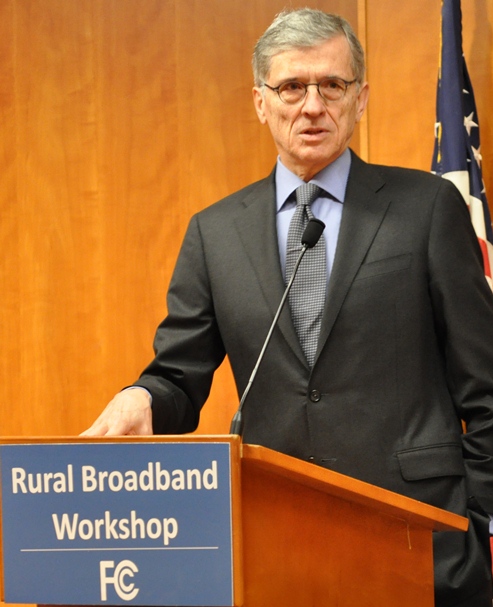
Rural Broadband Workshop: March 19, 2014

FCC Chairman Tom Wheeler’s Welcome and Opening Remarks